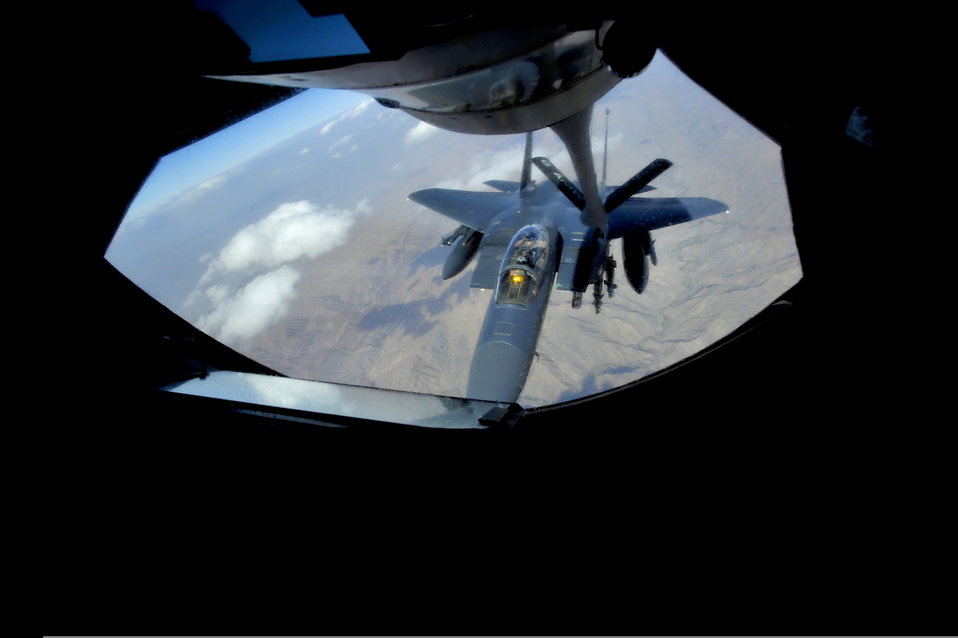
Mobility Airmen continue peak pace for Operation Enduring Freedom

An F-15E Strike Eagle is refueled by a KC-135 Stratotanker Sept. 25, 2009, over Afghanistan. The KC-135 is one of Air Mobility Command's leading air refueling aircraft supporting deployed operations for both Operation Enduring Freedom and Operation Iraqi Freedom.